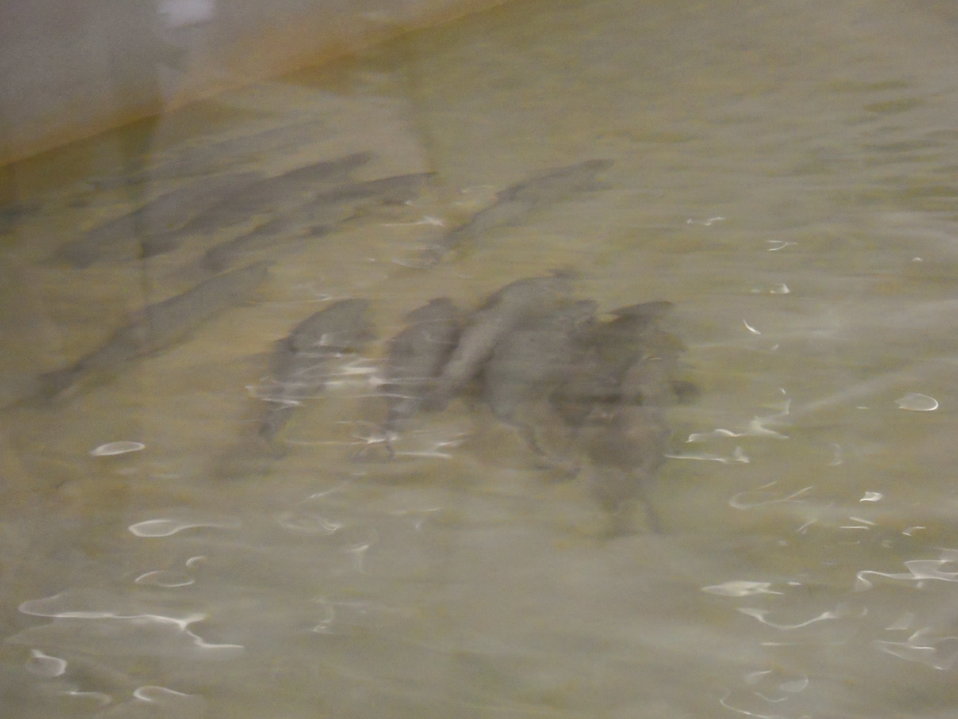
Atlantic salmon in hatchery